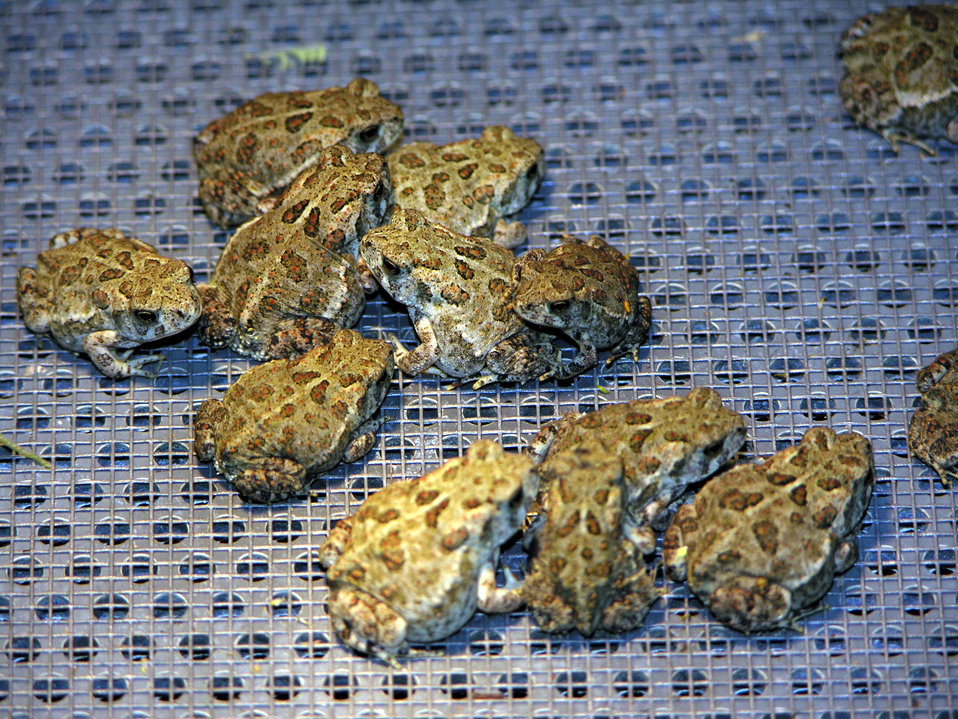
Wyoming Toads

The Wyoming toad is found only in certain parts of Wyoming and is considered one of the most endangered amphibians in North America. In 1984 the situation was so grave that the Wyoming toad was federally listed as an endangered species.